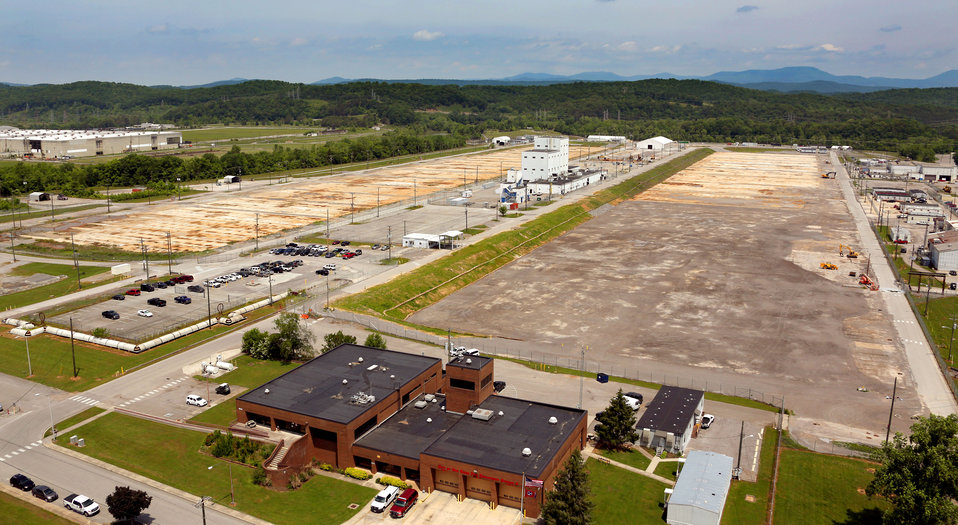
K-25 Foot print aerial 2014 Oak Ridge

JRO 0013 ORNL photo Jason Richards 5-20-2014 K-25 footprint Oak Ride Tennessee